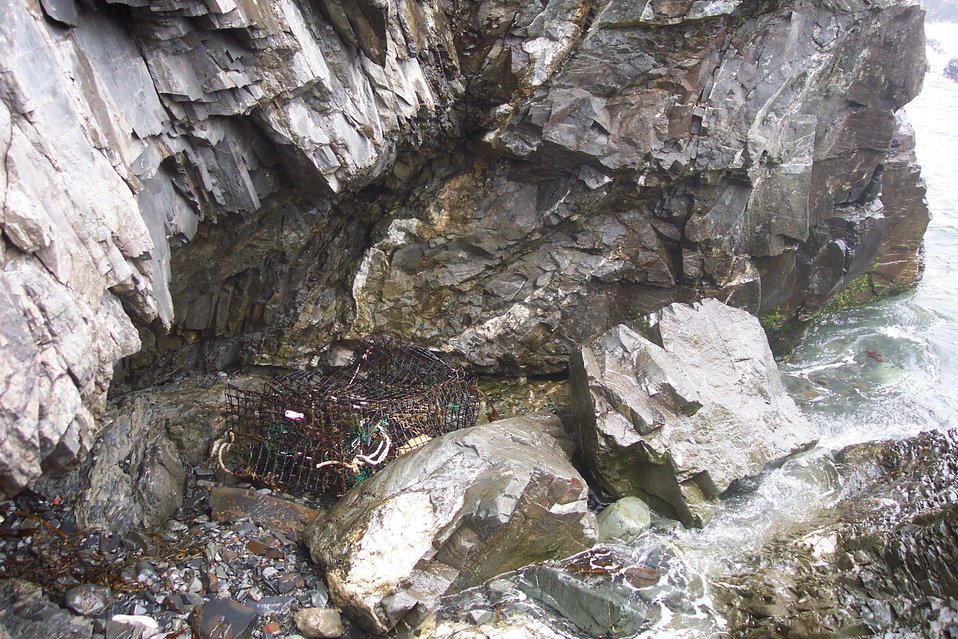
Lobster pot, foam-flecked sea, and the hard cliffs of West Quoddy Head.